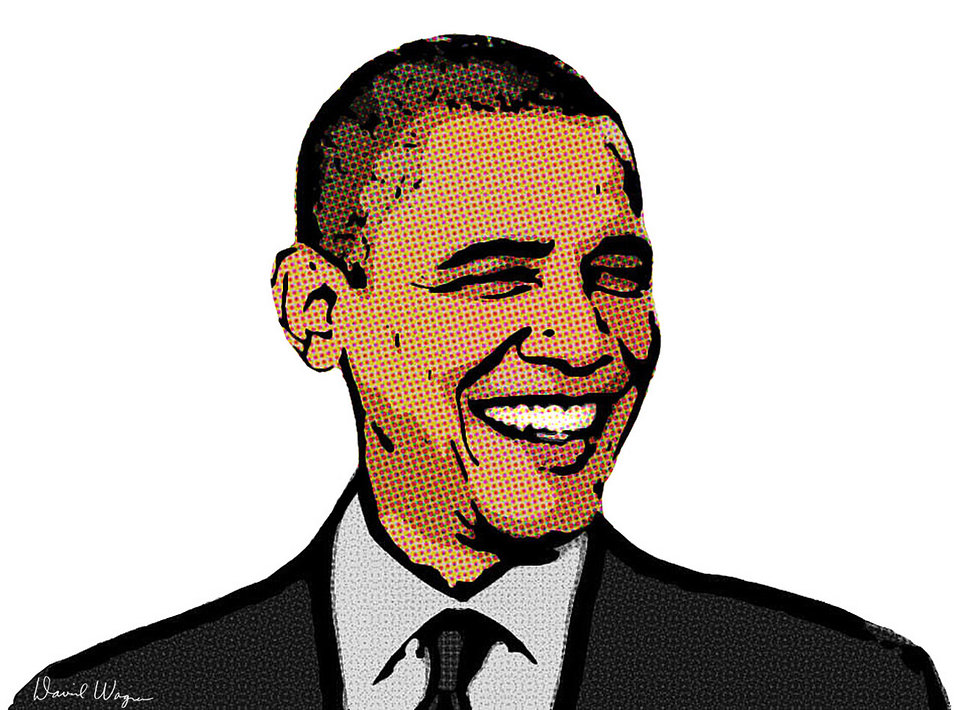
Barack obama 49

United states president barack obama.